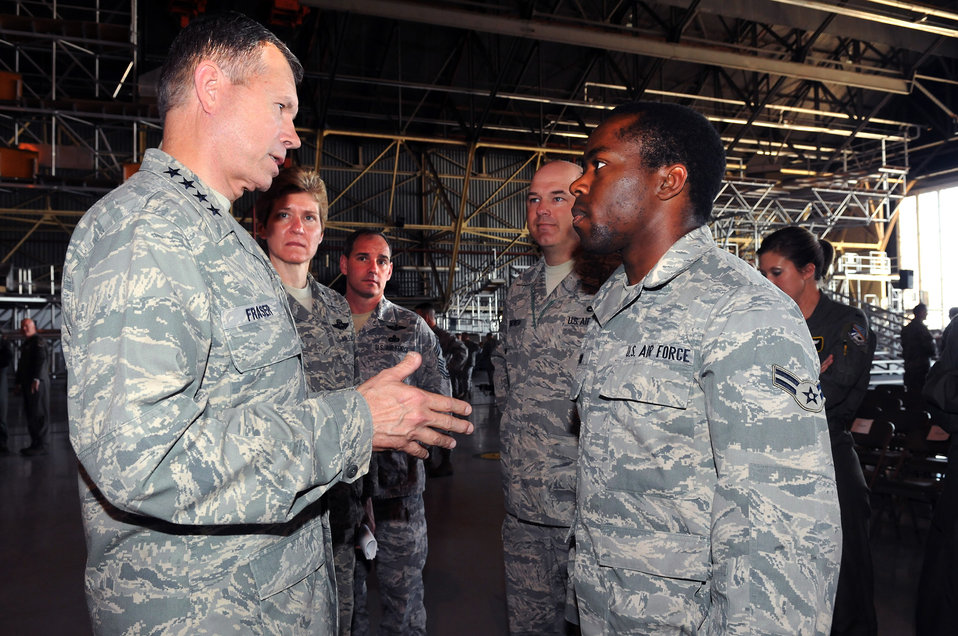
ACC leader visits Tinker

Gen. William M. Fraser III answers a question from Airman 1st Class Jonathan Wilson April 29, 2010, at Tinker Air Force Base, Okla. General Fraser is the commander of Air Combat Command. Airman Wilson is from the 552nd Aircraft Maintenance Squadron.